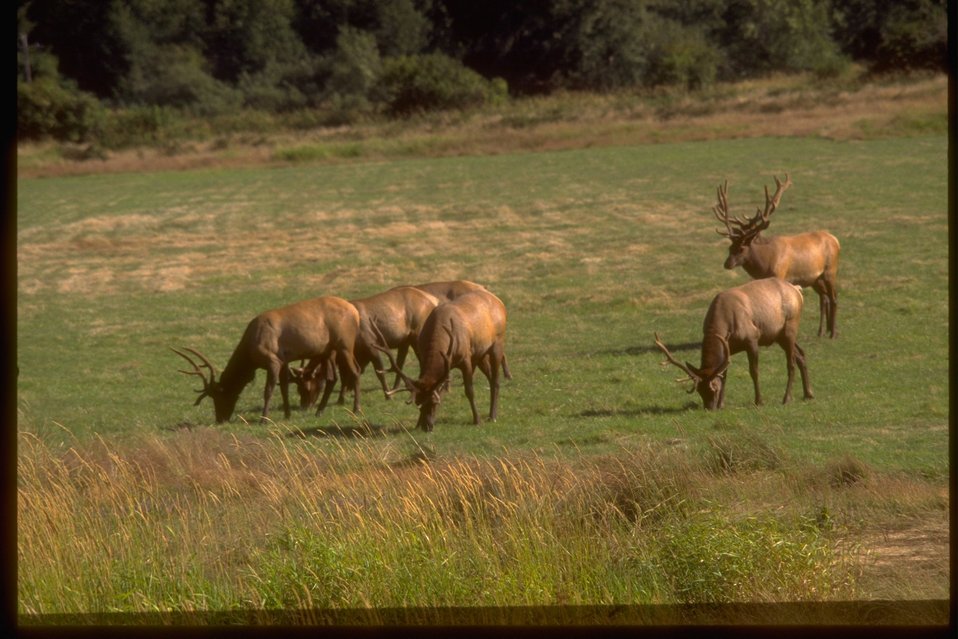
Deen Creek Elk.